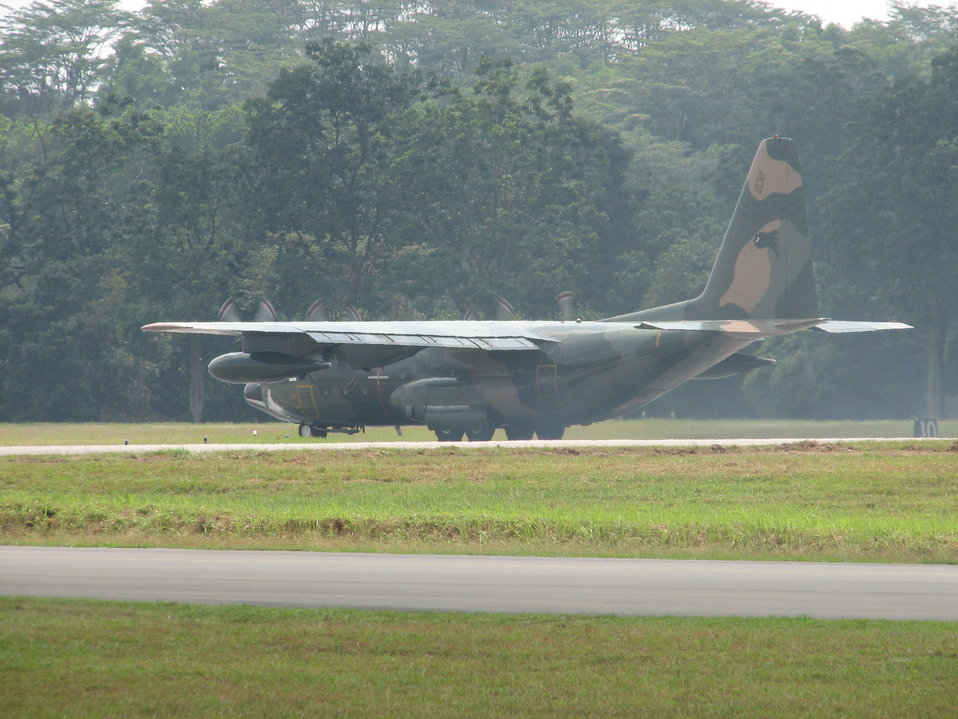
An RSAF C-130 Hercules coming to a complete stop in a simulated short field landing at Paya Lebar Airbase.
Category:Images of military aircraft Category:Images of Lockheed aircraft